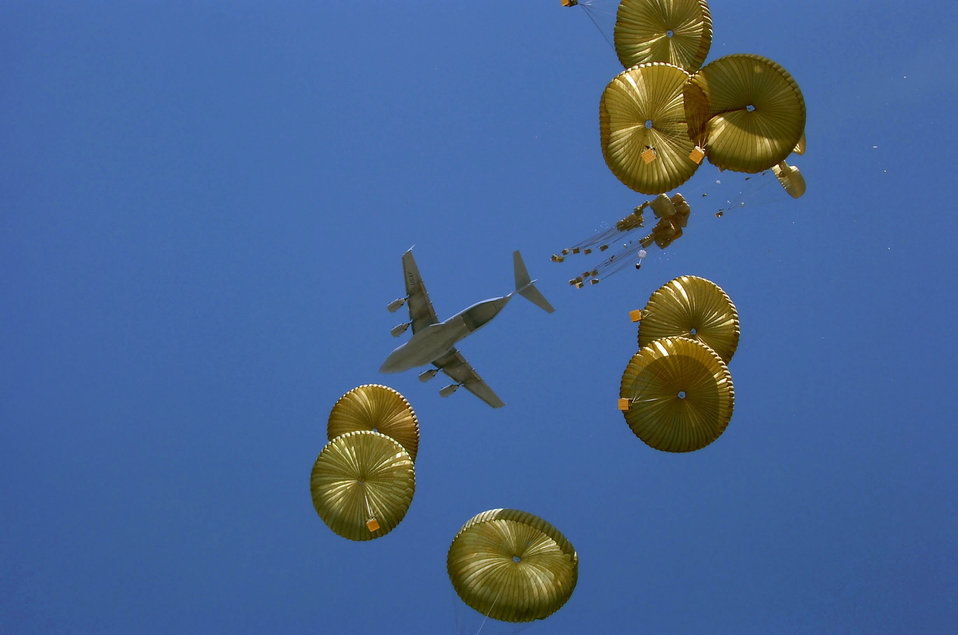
Oct. 16 airpower summary

A C-17 Globemaster III drops cargo bundles just a few hundred feet above another set floating down to coalition forces waiting below during a combat cargo drop in Paktika Province, Afghanistan Oct. 11 to support Operation Enduring Freedom.